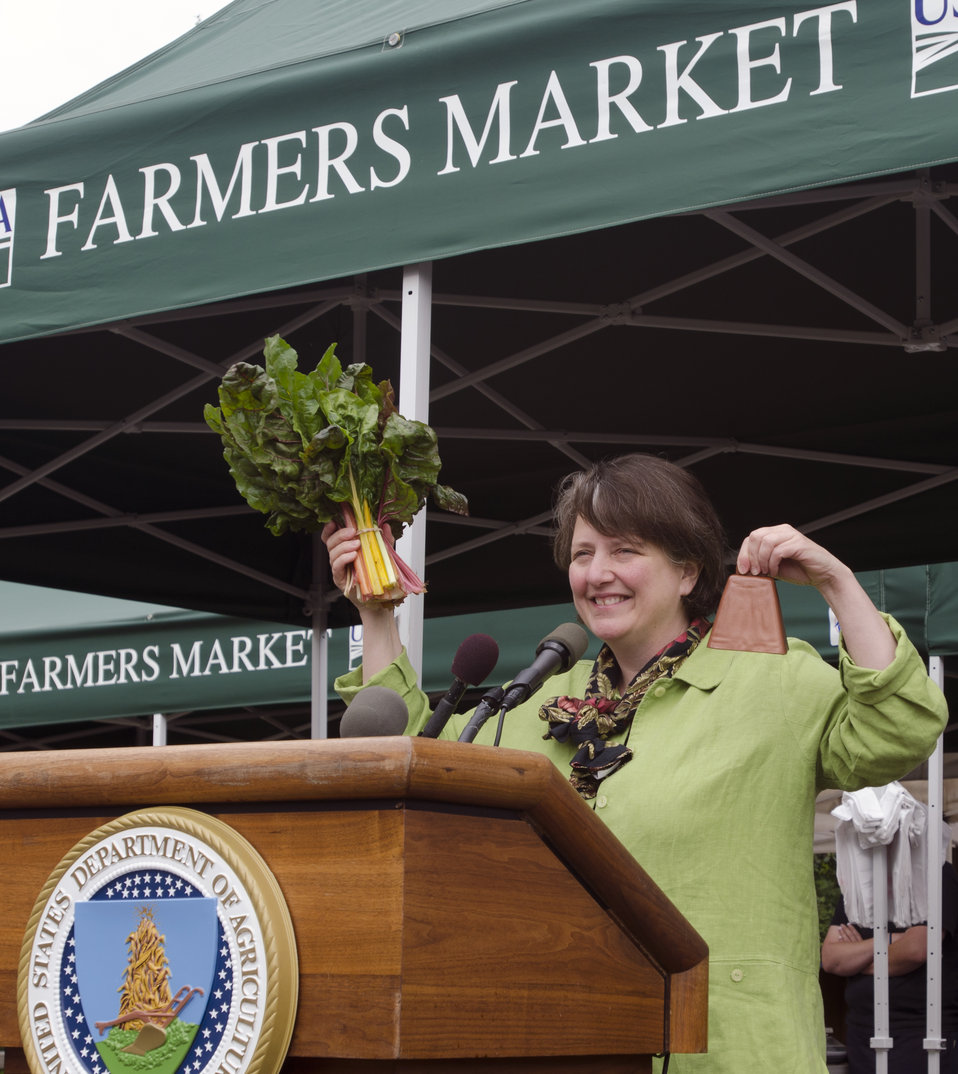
Agriculture Deputy Secretary Kathleen Merrigan rings the bell at the opening of the 17th season of the U.S. Department of Agriculture (USDA) Farmers Market at the USDA Whitten Building east parking lot in Washington, D.C., on Friday, May 31, 2012.